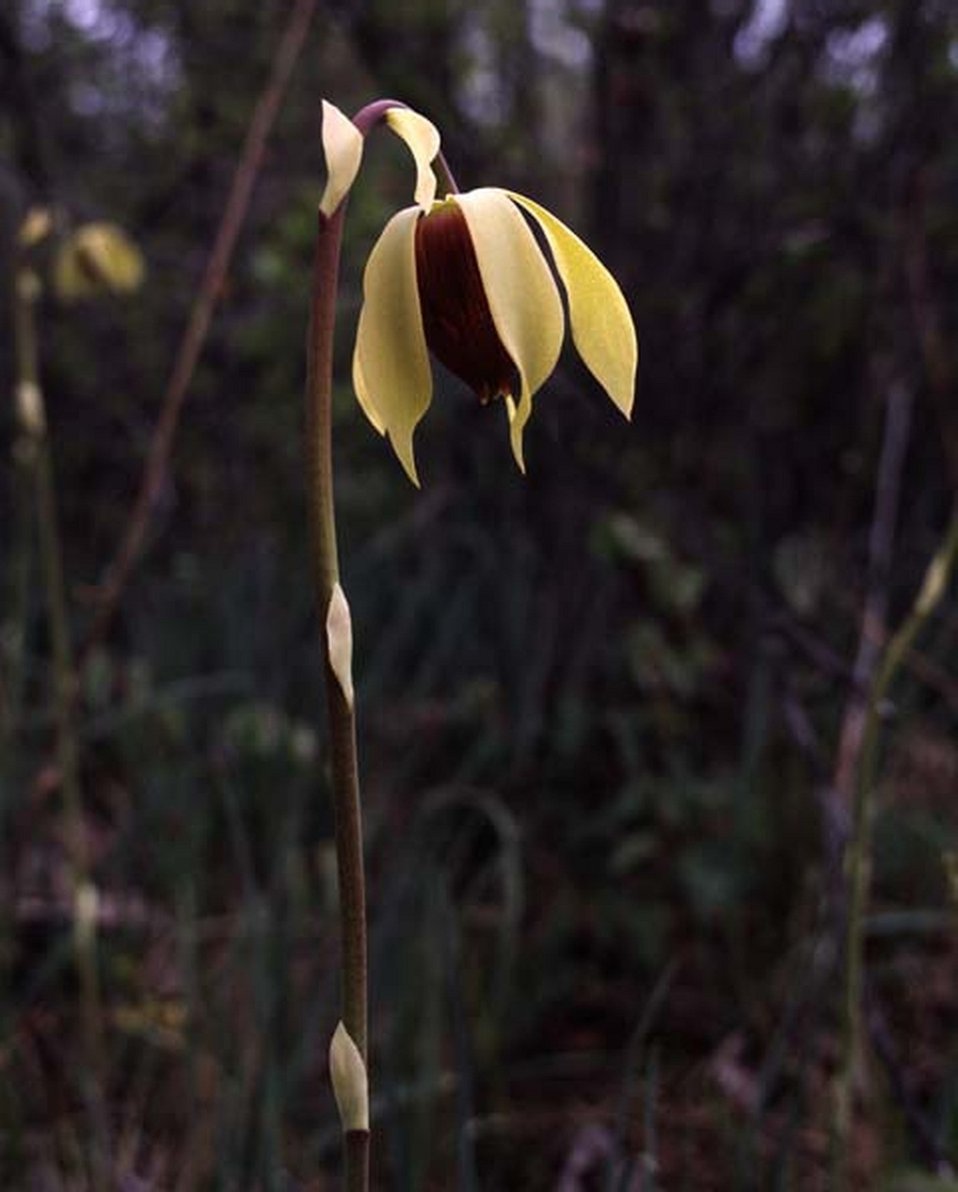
Medium shot of Darlingtonia Blossom.